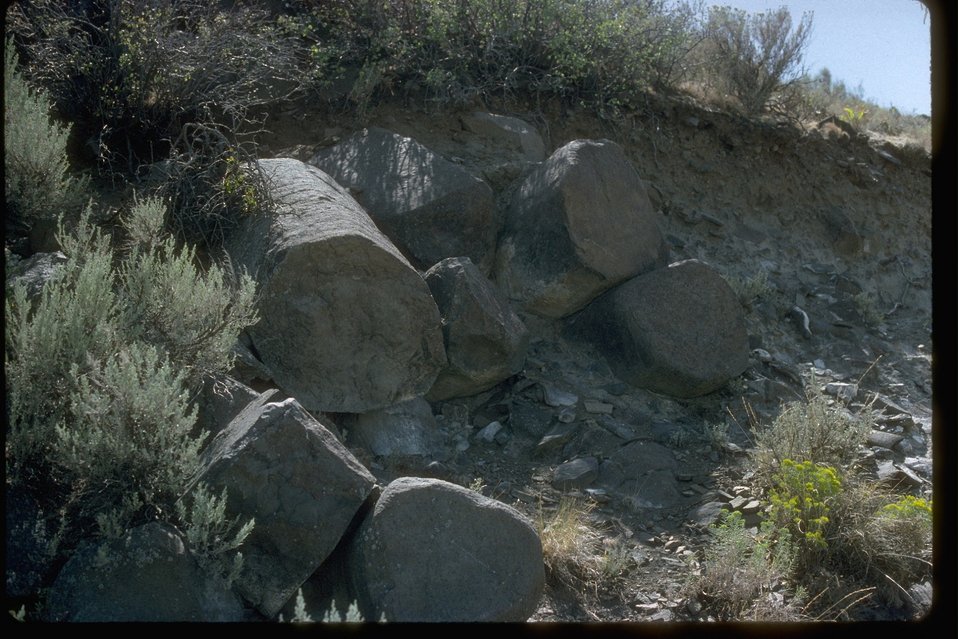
Columnar basalt near Wahatis Peak in Saddle Mountains, Washington